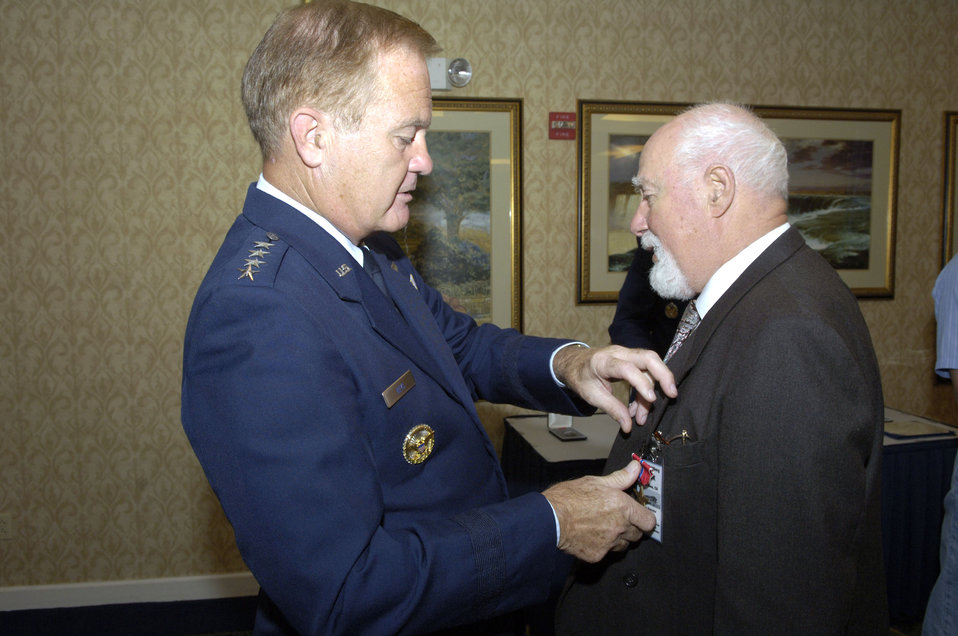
World War II vets receive Bronze Stars after 62 years

Gen. Ronald E. Keys presents Francis Goldberg a Bronze Star at a ceremony in Washington, D.C., Sept. 9. Five Bronze Stars were presented to World War II veterans. The paperwork for the medals had been misfiled and rediscovered more than 60 years later. The men were unaware they were supposed to receive the medals. General Keys is commander of Air Combat Command.